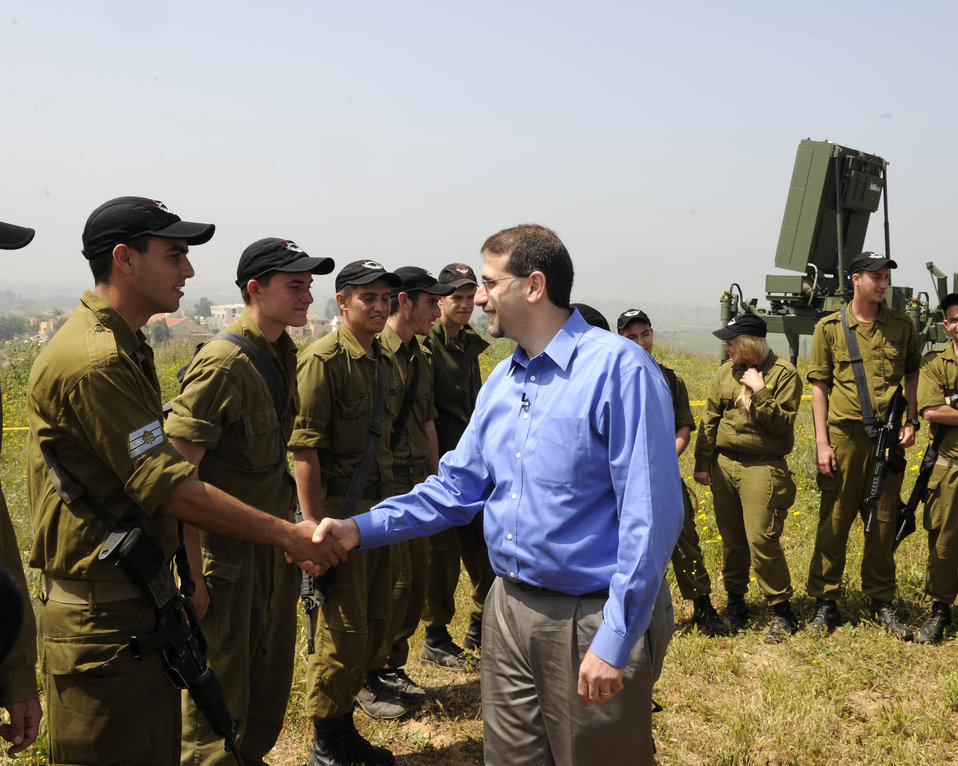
Ambassador Shapiro Meets With Israeli Soldiers

U.S. Ambassador to Israel Daniel Shapiro meets with Israeli Air Force Air Defense Forces Commander Brig Gen. Doron Gavish, battery commander Capt. Revital Uzan, and battery soldiers during his visit to the site of the newly-deployed Iron Dome battery in southern Israel on April 5, 2012.